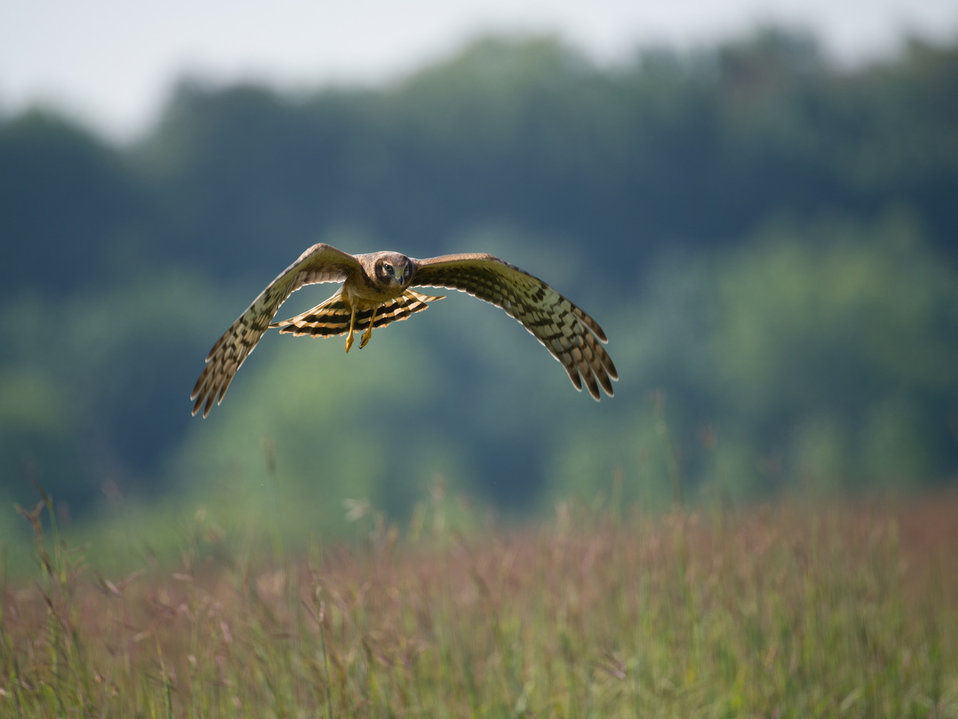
Northern Harrier

Female Northern harrier flying over Montezuma National Wildlife Refuge.